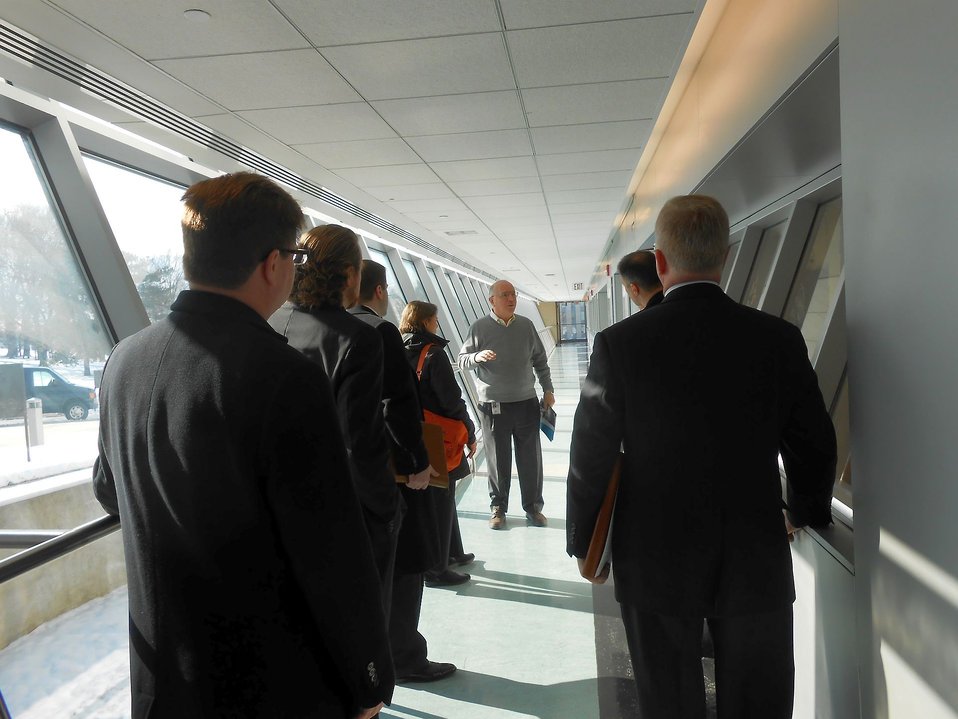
Chrysler Corporation External and Commercial Affairs Tour CNST

Dr. Robert Celotta (center), Director of the NIST Center for Nanoscale Science and Technology (CNST) briefs Chrysler Corporation External and Commercial Affairs officials on access to CNST nanofabrication and nanomanufacturing measurement research tools by industry scientists.